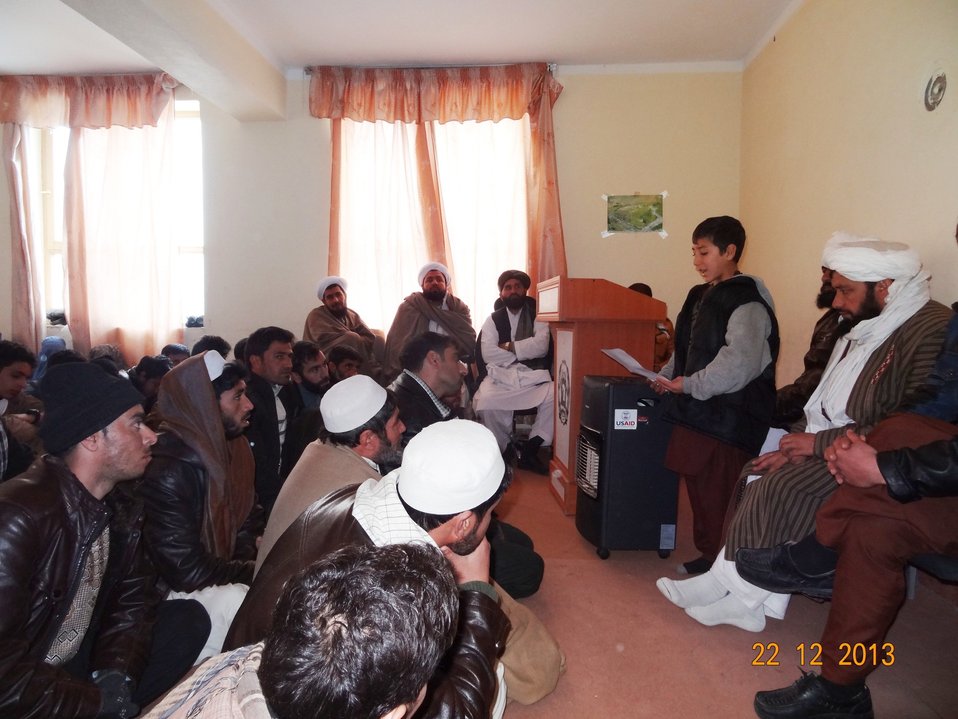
A school-student read an article titled “Education is our right, peace is our right” at the Kushk Rabat-e Sangi District education meeting on December 22nd.